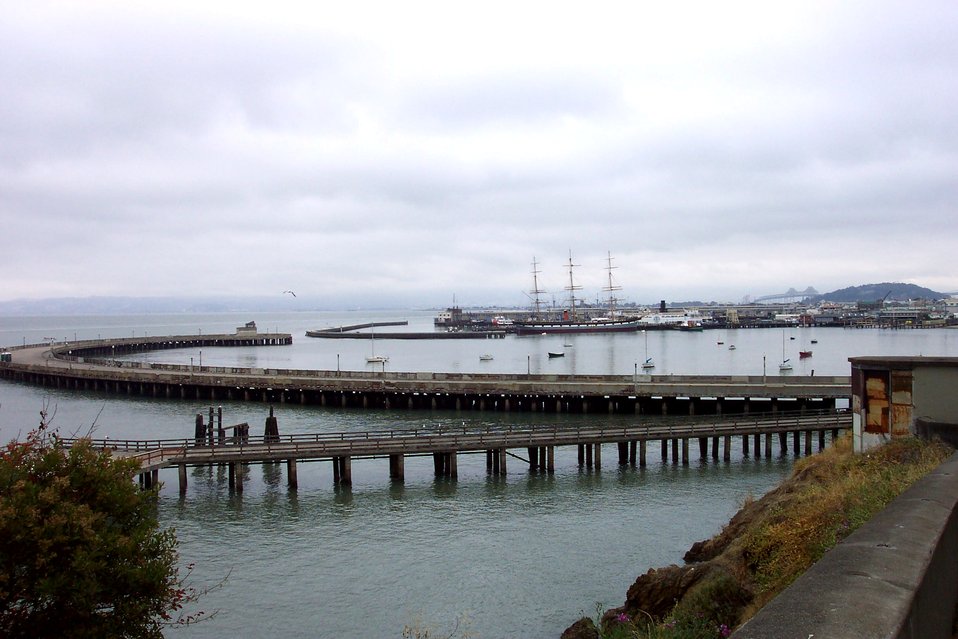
The basin at the San Francisco Maritime National Historic Park. The old square- rigger BALCLUTHA is in the right-center of the photo.